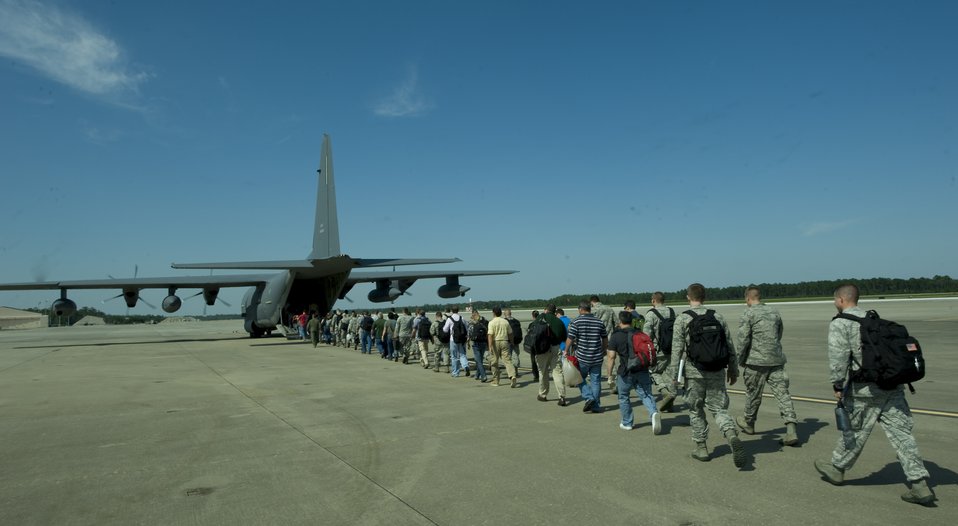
Tropical Storm Preparation

Airmen of 11th Intelligence Squadron board a C-130 during evacuations on the flightline at Hurlburt Field, Fla., Aug. 26, 2012. Hurlburt Field assets were being evacuated as Tropical Storm Isaac approaches the Gulf Coast region.